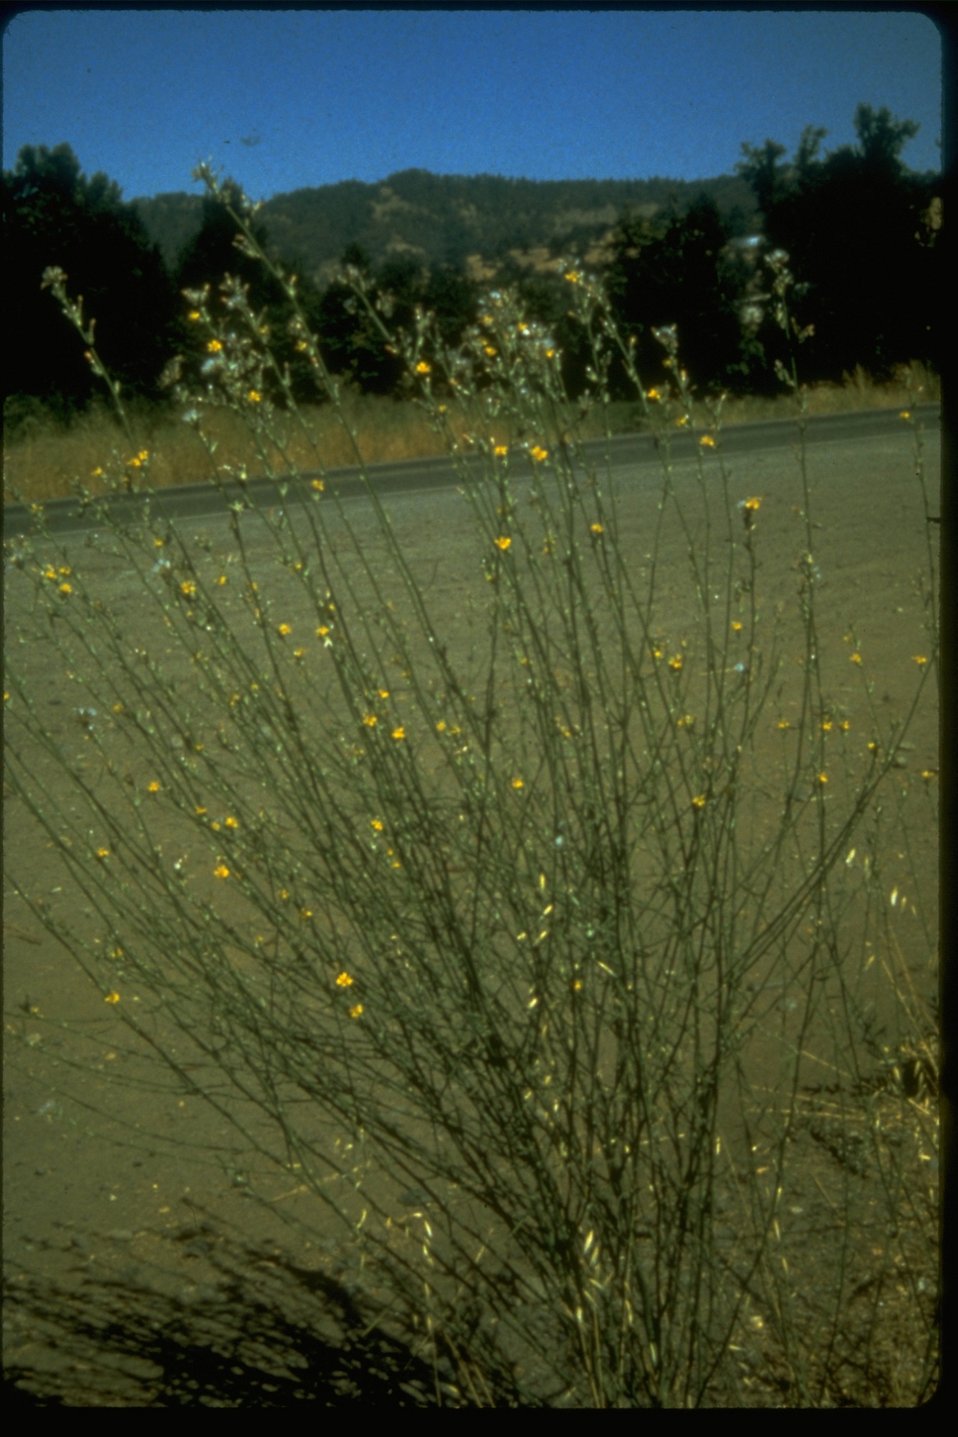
Single plant of Rush Skeletonweed.